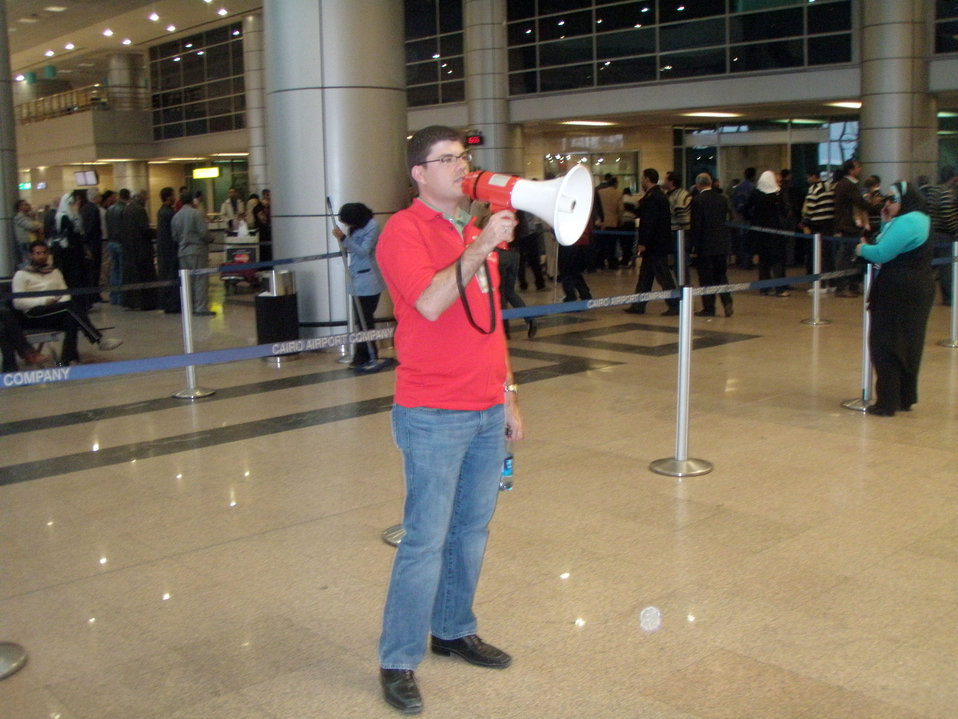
Public Diplomacy Officer Lenert Calls for Americans

Embassy Cairo Public Diplomacy Officer Adam Lenert calls for Americans at the Cairo International Airport in Egypt on February 7, 2011.